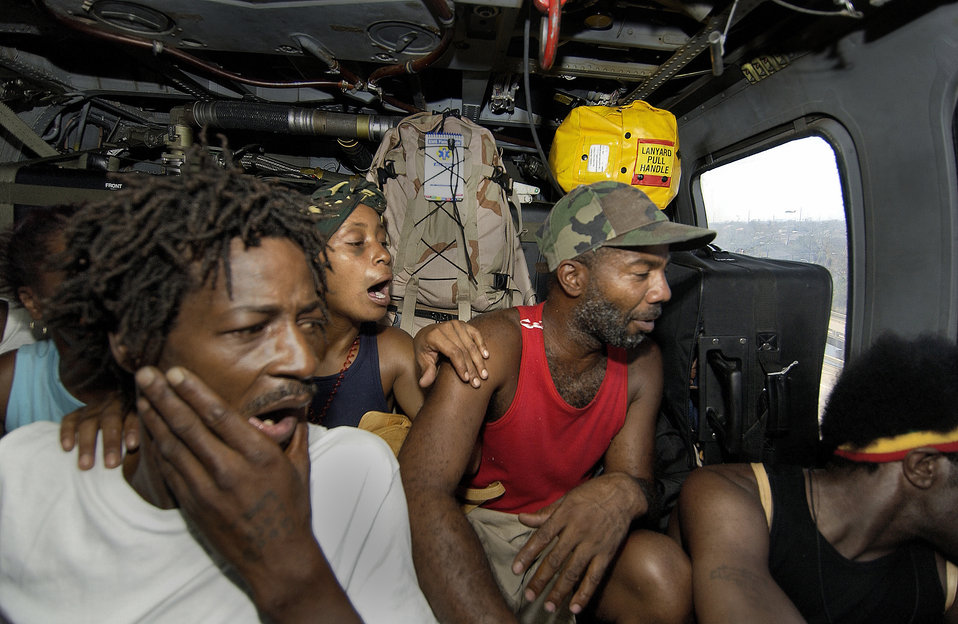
Hurricane Katrina Relief Efforts

NEW ORLEANS -- Displaced citizens stare in shock at the devastation caused by Hurricane Katrina here Sept. 4. The evacuees were rescued by Air Force HH-60 Pave Hawk crews. The Airmen have rescued and evacuated thousands of people from the area.